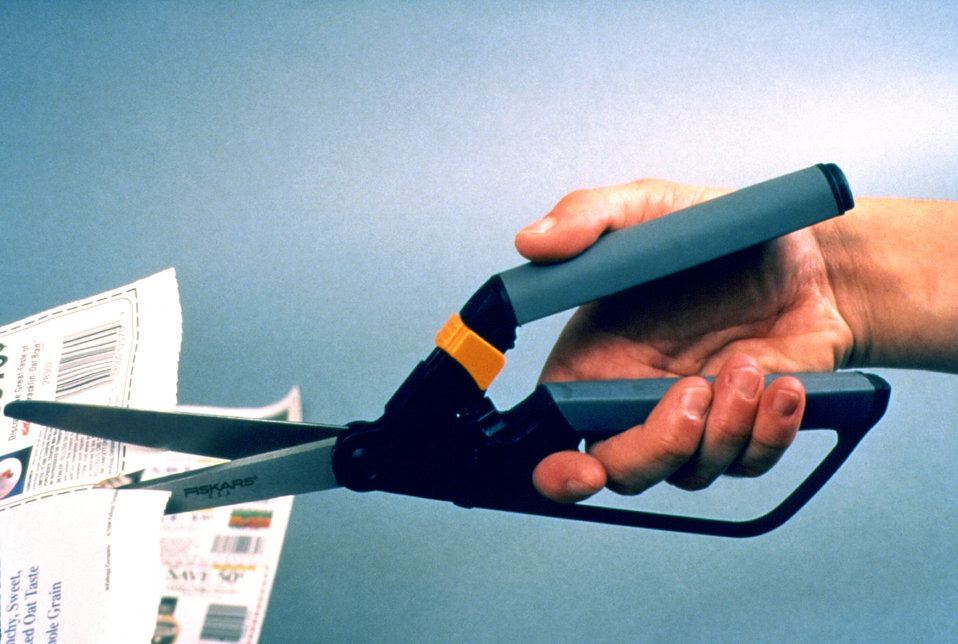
Manufactured by Fiskars�, the 'ambidextrous' scissors depicted in this 1996 photograph were unlike other scissors, for they were designed to be used by people who were left, or right handed. They also employed a spring that would open the scissors automatically, thereby, allowing for a variety of interchangeable hand grips. This cutting implement could accommodate very large hands as well, which increased the usability comfort range. However, the cost for these 'customized' scissors was higher than their unmodified counterparts.